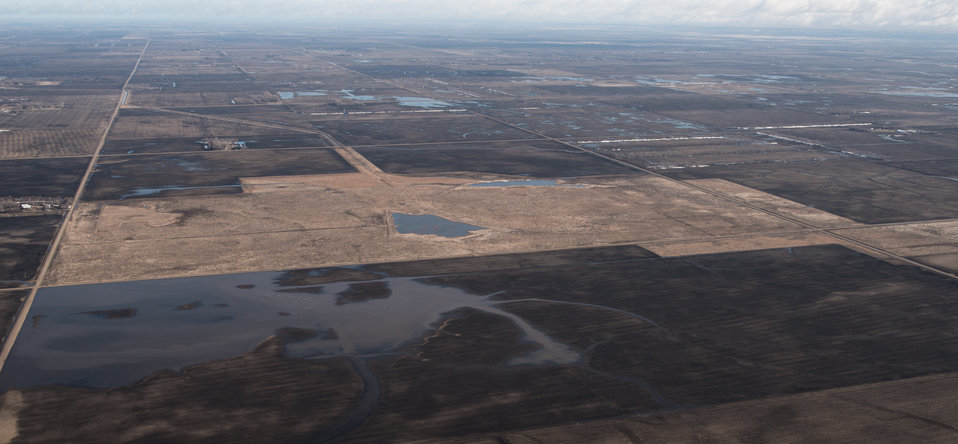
Vertin, U.S. Department of Agriculture (USDA) Natural Resources Conservation Service (NRCS) Wetland Reserve Program (WRP) in Wilkin County, MN, on Tuesday, April 30, 2013. For information about this and other programs from the USDA Red River Basin Initiative (RRBI) please see www.mn.nrcs.usda.gov/news/features13/RRBI.html.